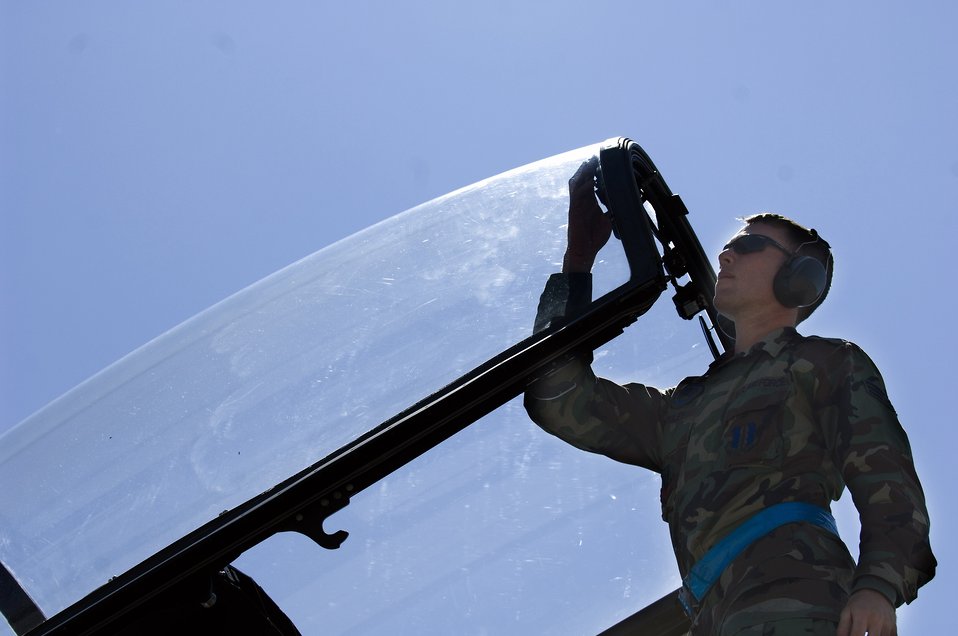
Maple Flag Exercise

Senior Airman Robert Wigley performs a pre-flight inspection on an F-15C Eagle during the Maple Flag Exercise at Cold Lake, Canada. Maple Flag 41 is a four-week international air combat exercise held annually at 4 Wing Cold Lake, Alberta. The exercise provides Canadian and allied aircrew with realistic training in a modern simulated air combat environment, and emphasizes air operations involving large package coalition forces.